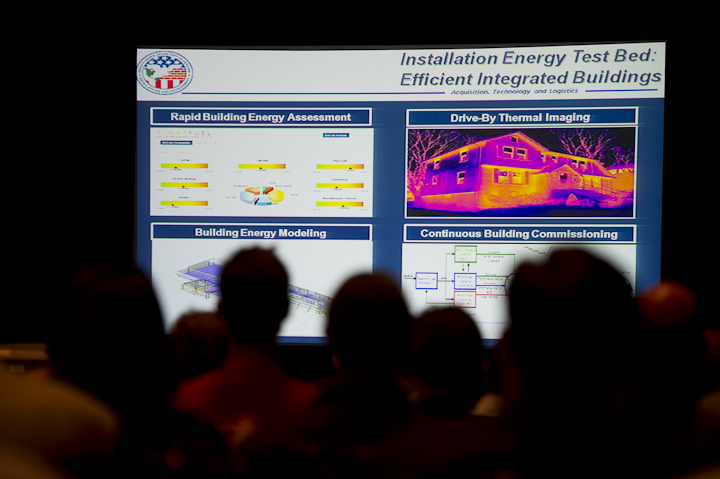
SunShot Presentation

June 13, 2012- The audience listens to a presentation by Dorothy Robyn, Deputy Under Secretary of defense for Installations and Environment at the plenary session of the SunShot Grand Challenge Summit and Technology Forum in Denver, Colorado.